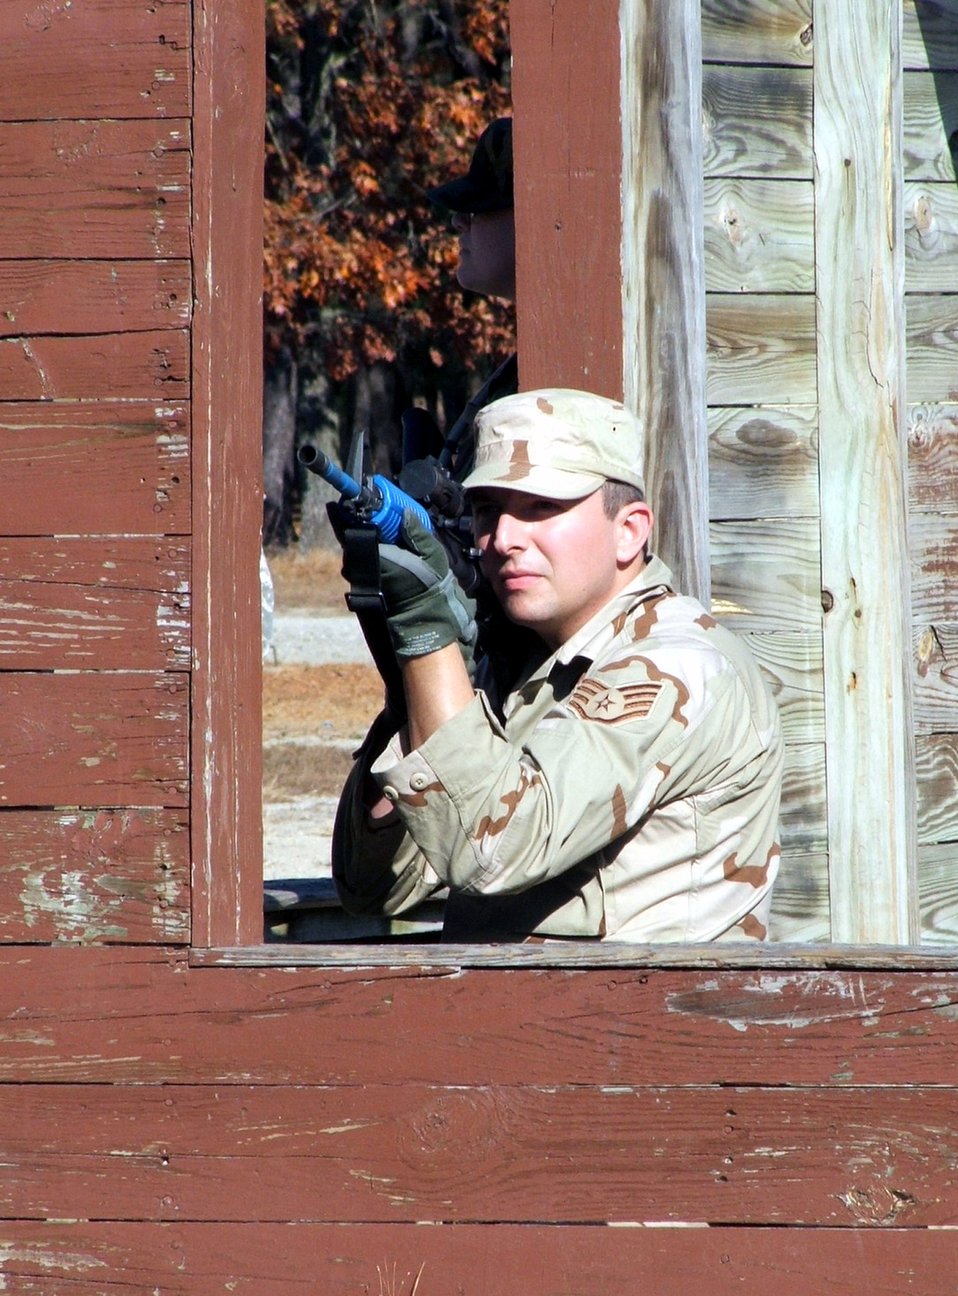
Position

FORT DIX, N.J. (AFPN) -- A staff sergeant takes up a firing position as part of the combat interrogator course 06-1.